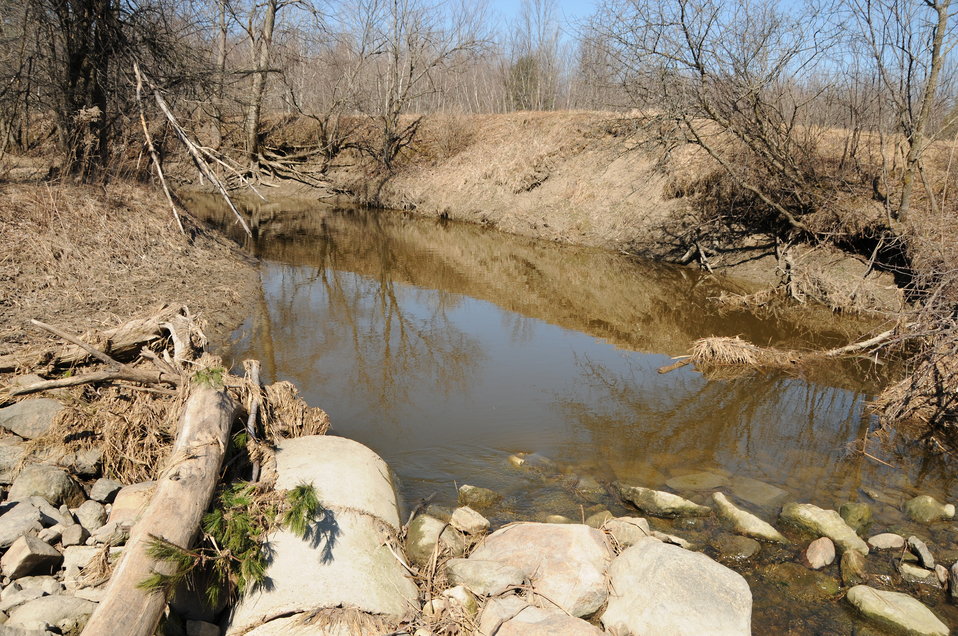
Little Sucker Brook: Assessing fish passage barrier

The small culvert for passage was too high to allow flow through it during low water levels, and at high water levels, the water rushed through too quickly for fish.